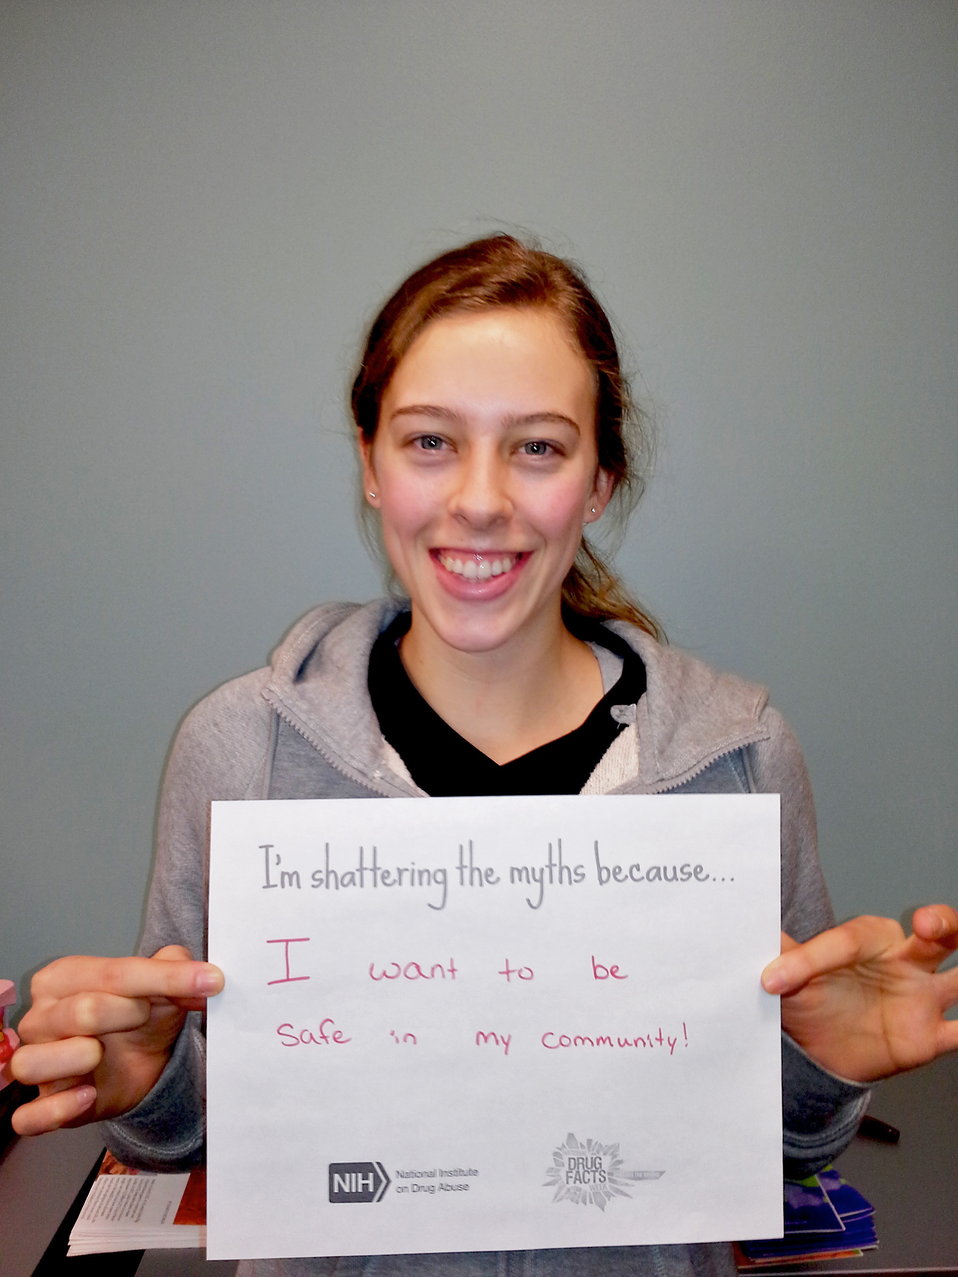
Shattering the Myths campaign in Winona, Minnesota